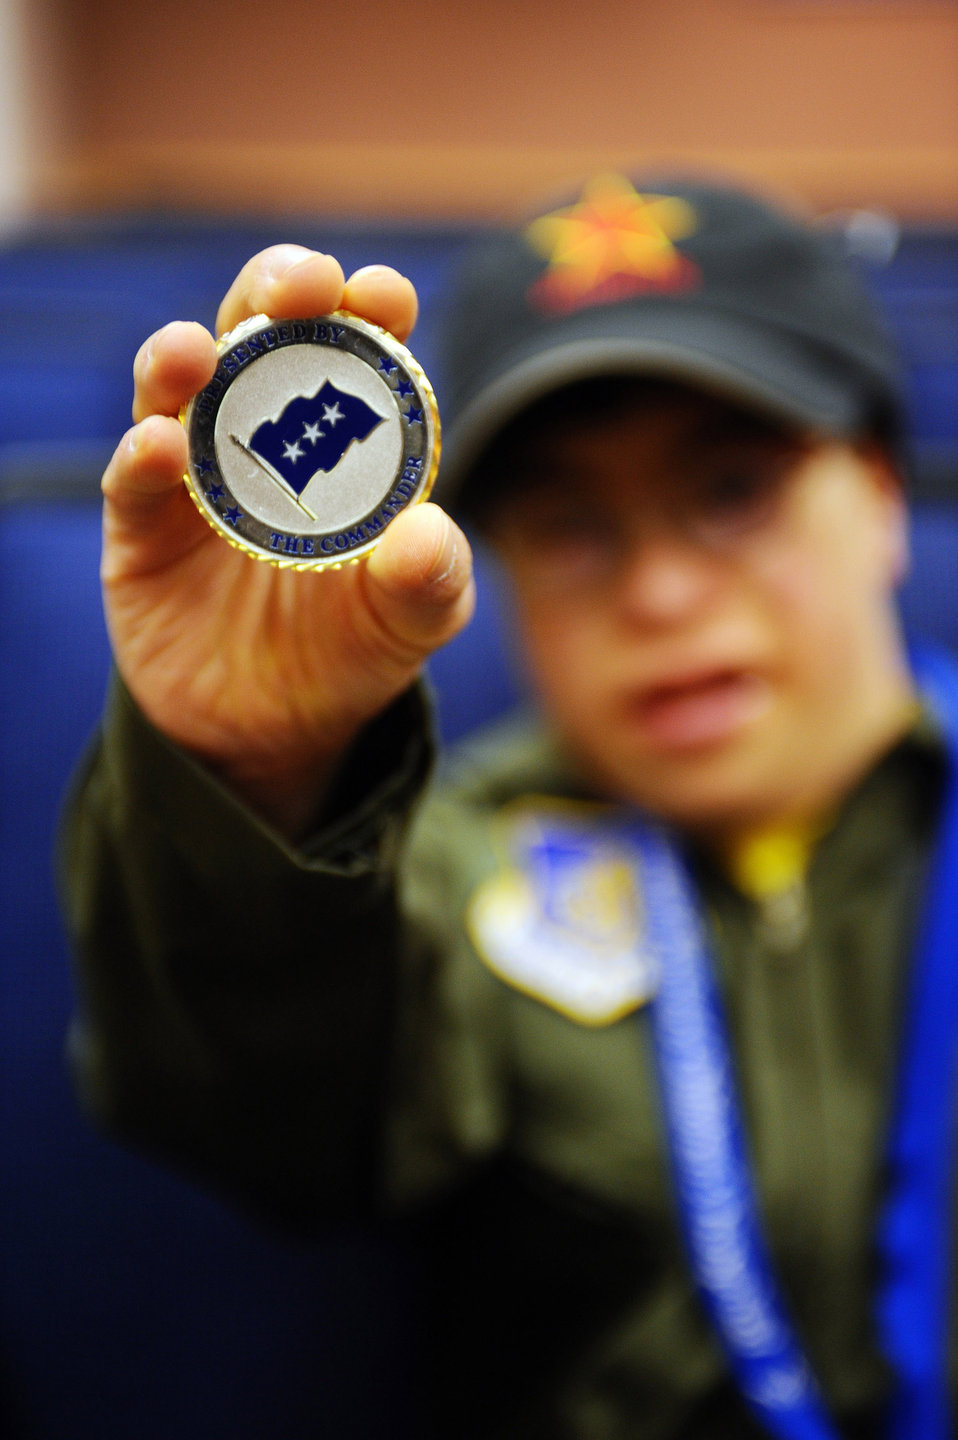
Eielson Airmen turn child into pilot for a day

Alex Lee holds up a challenge coin he received from Lt. Gen. Dana T. Atkins Aug. 22 at Eielson Air Force Base, Alaska. Alex was born with congenital heart defects and Down syndrome and was selected by the Make-A-Wish Foundation for the Pilot for a Day program. The purpose of the program is to ease the pain of children who lost a normal childhood due to illnesses or disabilities. General Atkins is the 11th Air Force commander.